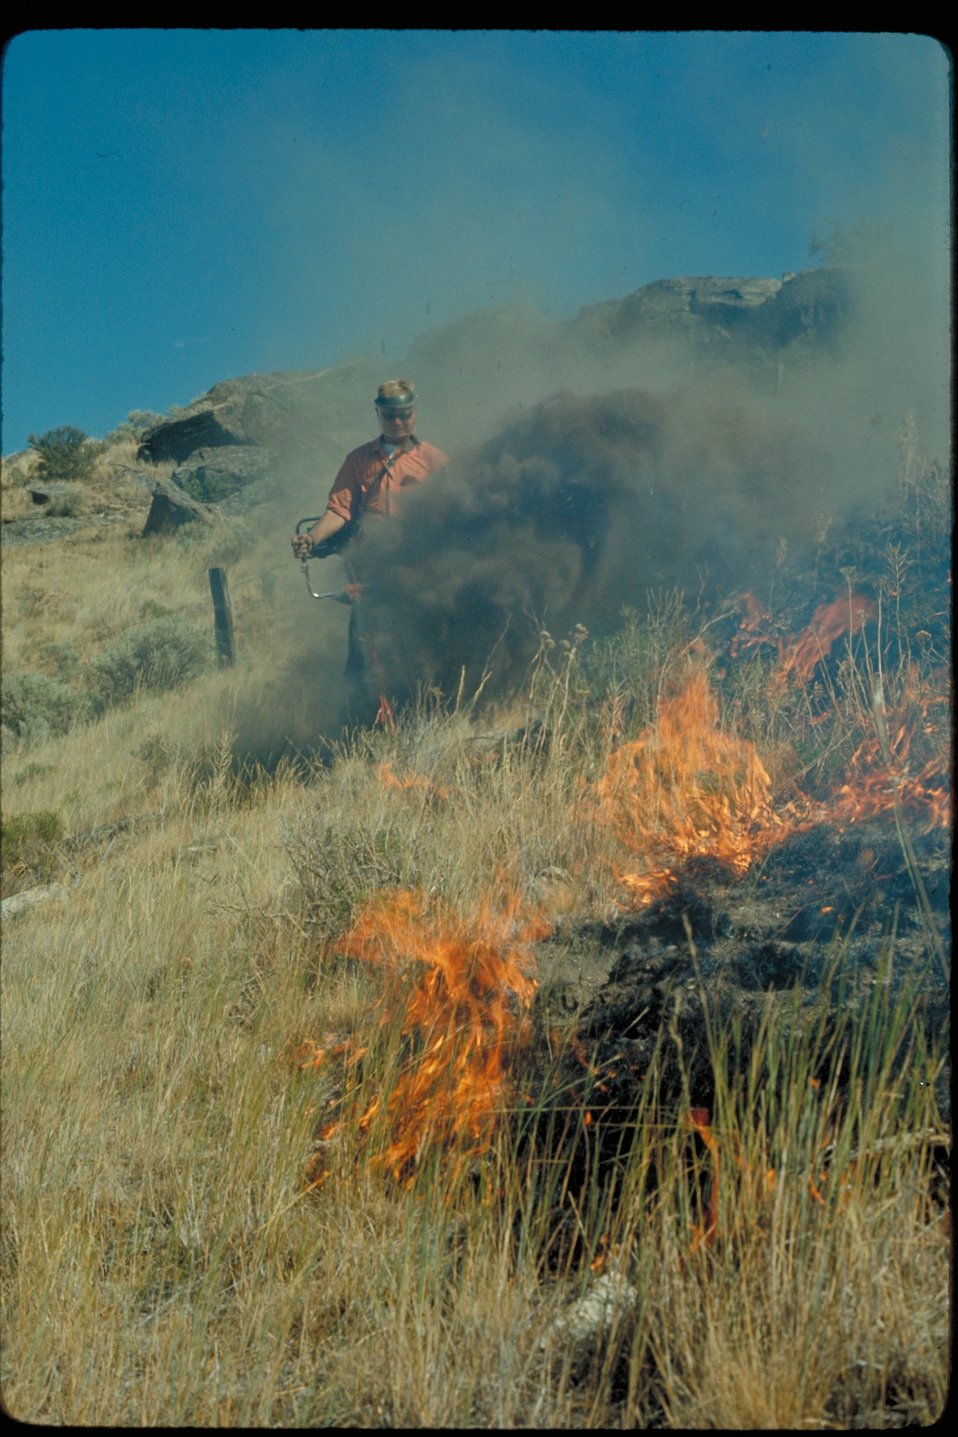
Flail Trencher near Table Rock Boise Front Four Rivers Field Office LSRD Lower Snake River District